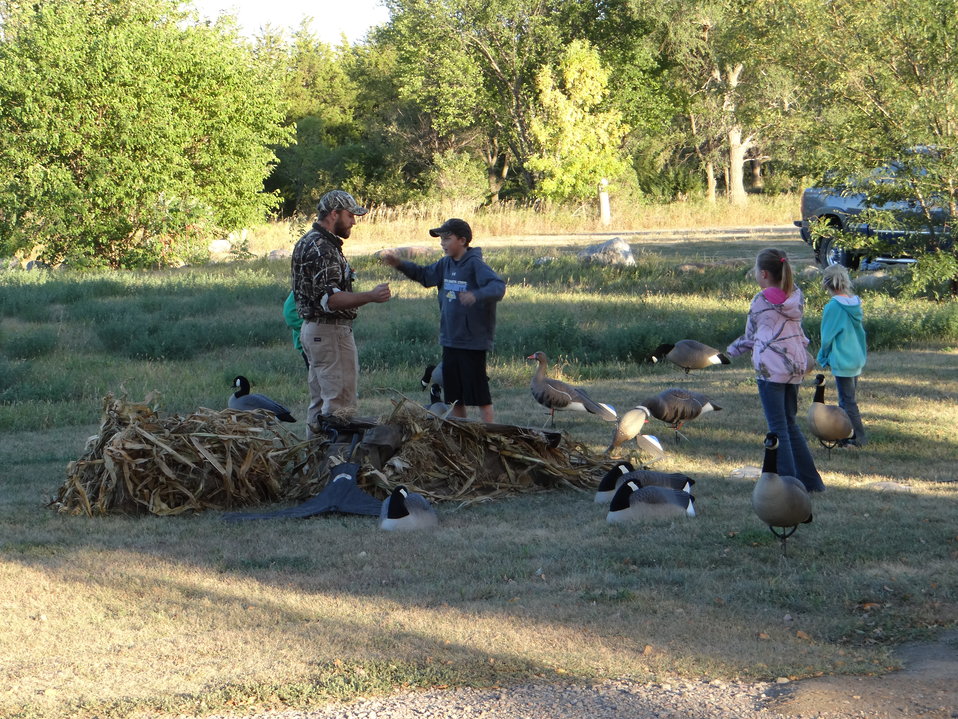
Blinds and Decoys

2013 Huron WMD Youth Waterfowl Hunt. Day one, how to set up your blind and decoys demonstration.The Huron Wetland Management District hosted its 10th annual Youth Waterfowl Hunt in September. This event provided 28 youth hunters between the ages of 12 – 15 and (new) mentored hunters (10-11), an opportunity to learn about various migratory birds and their habitats, duck and goose calling, decoys, and waterfowl hunting techniques. This event continues to be a success each year due to the dedicated volunteers within the community of Huron.